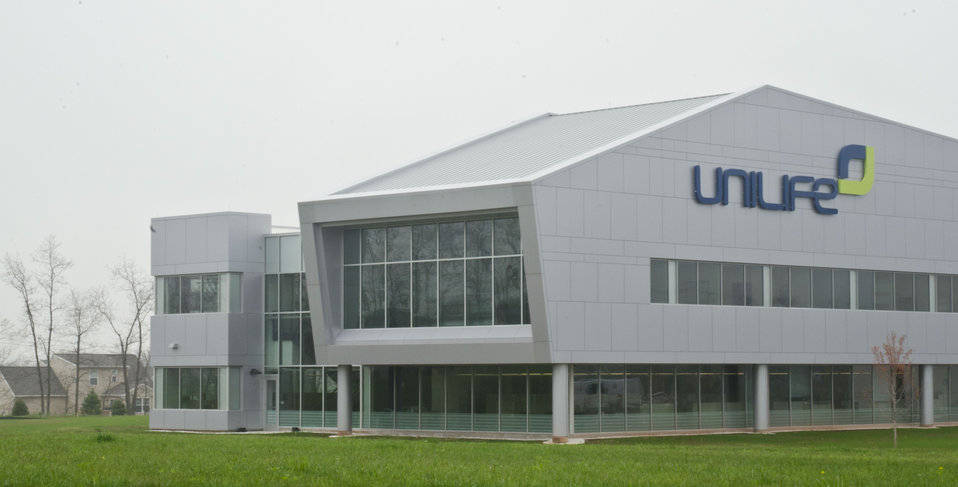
Unilife is a medical device company focused on the design, development, manufacture and supply of a proprietary range of retractable syringes on Monday, April 20, 2011 in York, PA. In partnership with Sanofi-aventis, Mikron Group, and MDMA, U.S. Department of Agriculture Rural Development was able to guarantee $18,000,000 through its Business and Industry Guaranteed Loan Program to construct a custom-built, global headquarters and commercial production facility in York, Pennsylvania. The 165,000 sq. ft. facility was completed in late 2010 and can accommodate future growth as well as the Company’s projected demand from pharmaceutical and healthcare companies for its proprietary range of Unifill ready-to-fill (prefilled) and Unitract general purpose safety syringes. Stage one of the facility is designed to accommodate the production of up to 400 million Unilife syringes per year and to meet stringent pharmaceutical standards for primary drug containers. Adjacent to the manufacturing facility is Unilife’s global headquarters (grey exterior) that support administrative, marketing, new product development, quality laboratories and other operational functions. Unilife, which first arrived in Pennsylvania in 2006. The company has doubled its employees for the past three years. There are approximately 150 employees, and they expect to double the number by 2015.